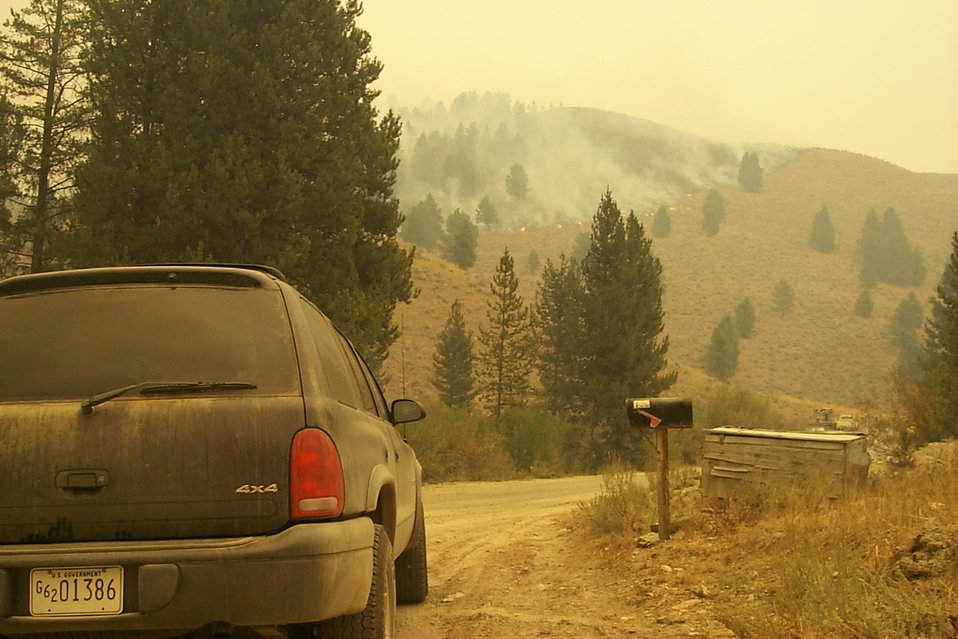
Fire Clearwater Fire Salmon Field Office USRD Upper Snake River District